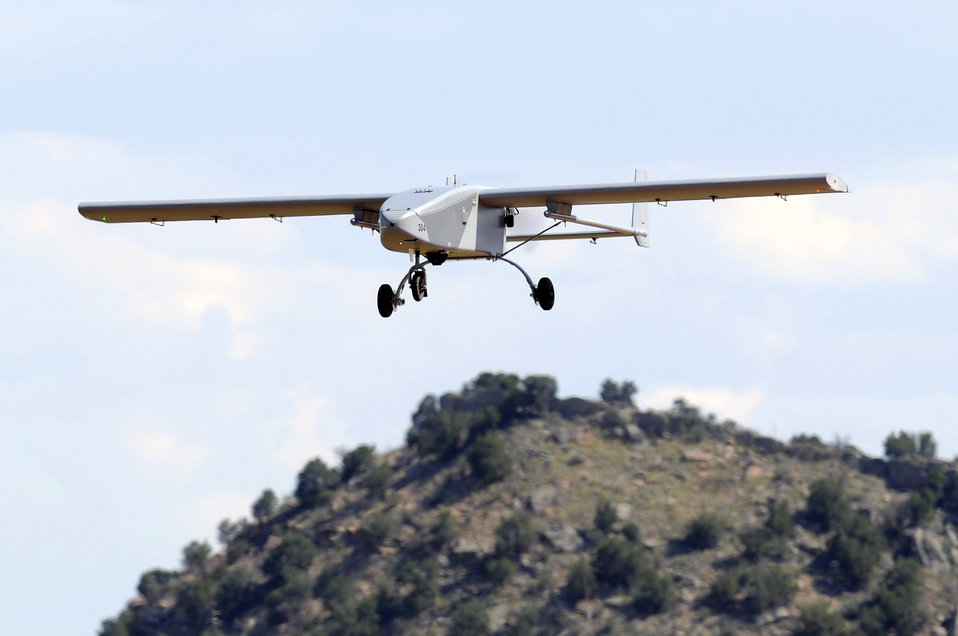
Academy officials add unmanned aircraft system into curriculum

The U.S Air Force Academy's unmanned aircraft systems Viking 300 aircraft flies July 22 over Fort Carson, Colo.